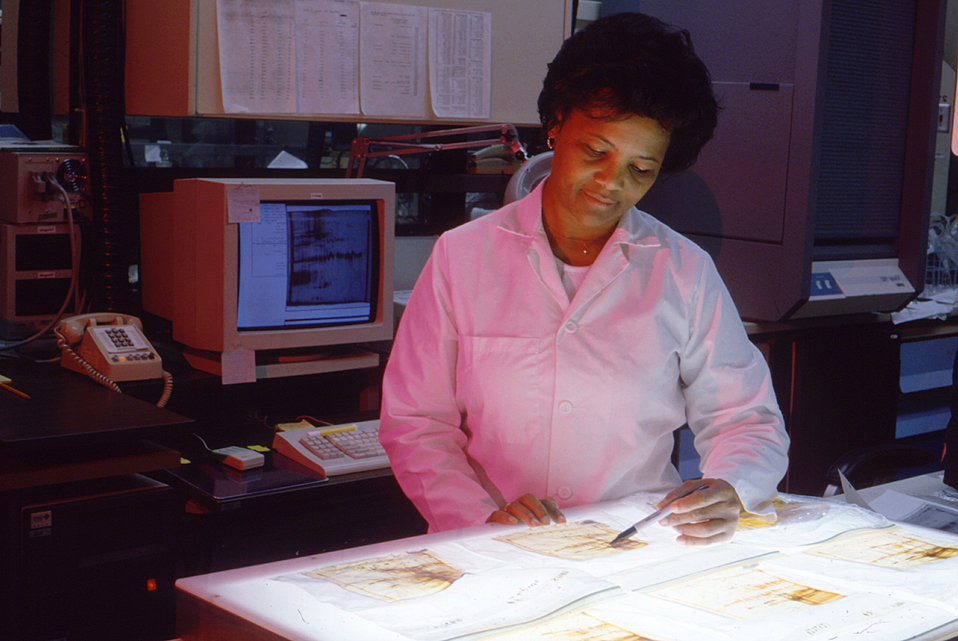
This 1980s photograph depicts a Centers for Disease Control laboratory technician analyzing scientific data.